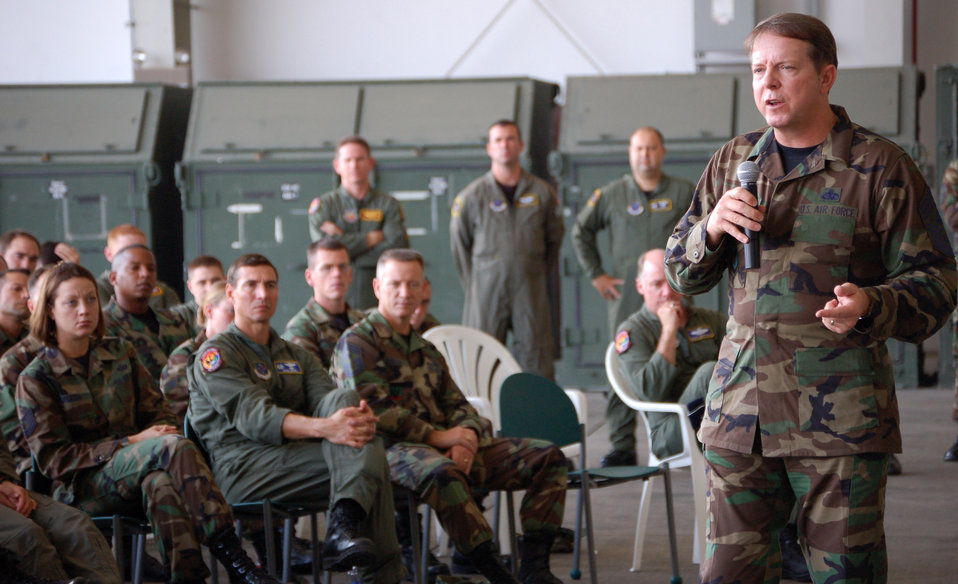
Chief McKinley says roll call good for Air Force

Chief Master Sgt. of the Air Force Rodney J. McKinley speaks to Airmen Dec. 12 at Manta Forward Operating Base in Ecuador. Manta is at the center of the U.S. war on drugs in Latin America. He discussed the importance of bringing back roll call, saying that supervisors are the key to getting top-level Air Force information to Airmen as well as getting feedback from the Airmen.